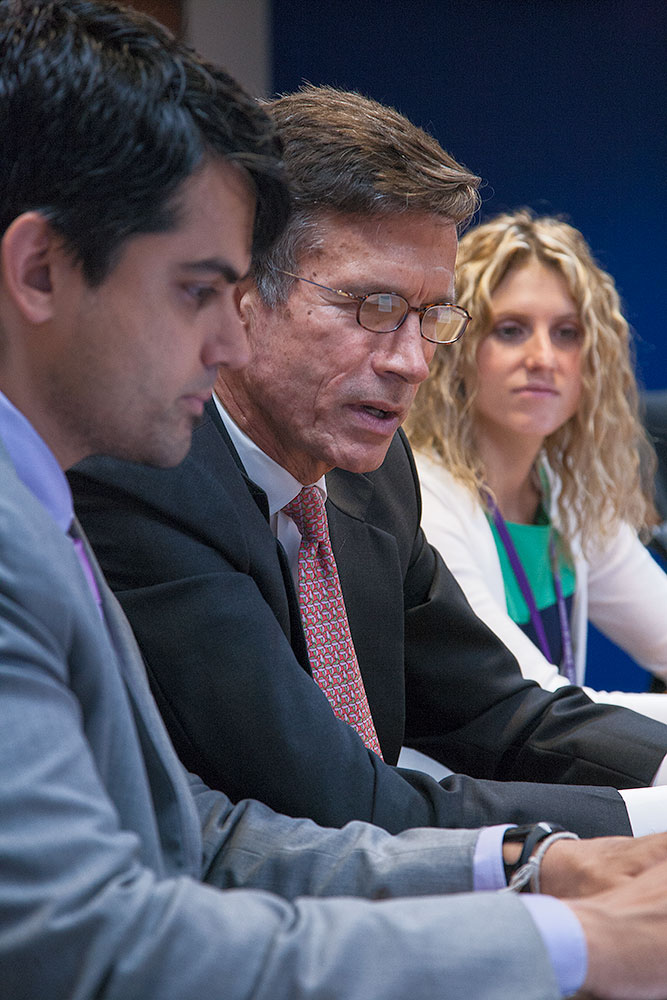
Assistant Secretary Blake Participates in a Facebook Chat

Assistant Secretary of State Robert O. Blake participates in a Facebook on U.S.-India relations on July 2, 2013.